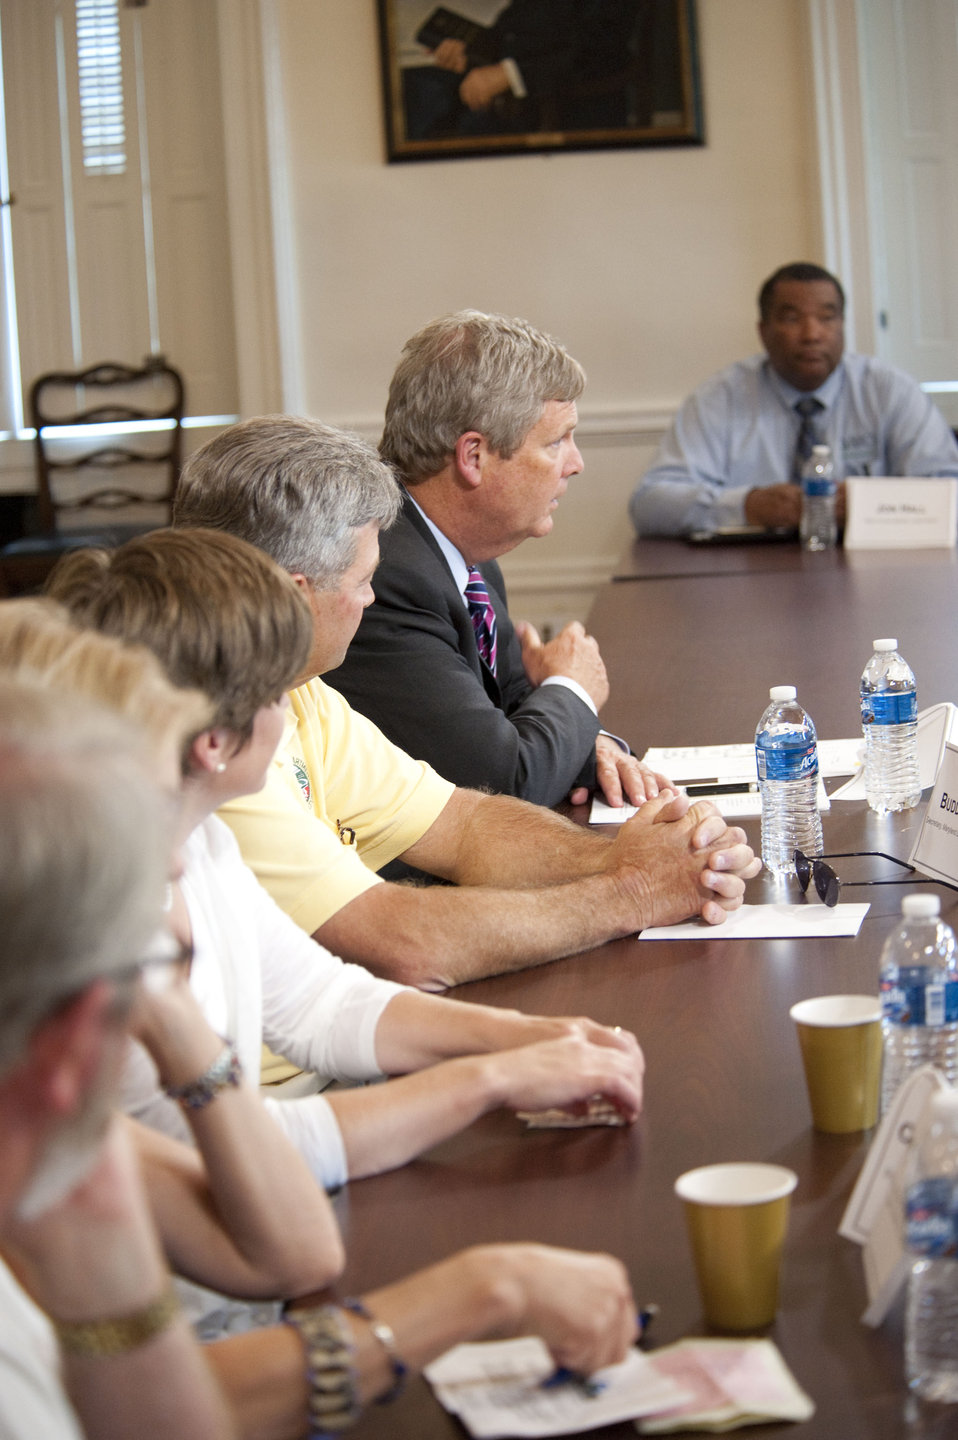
Agriculture Secretary Tom Vilsack meeting with Maryland Agricultural Leaders for a round table discussion in Annapolis, MD, on Thursday, July 21, 2011.